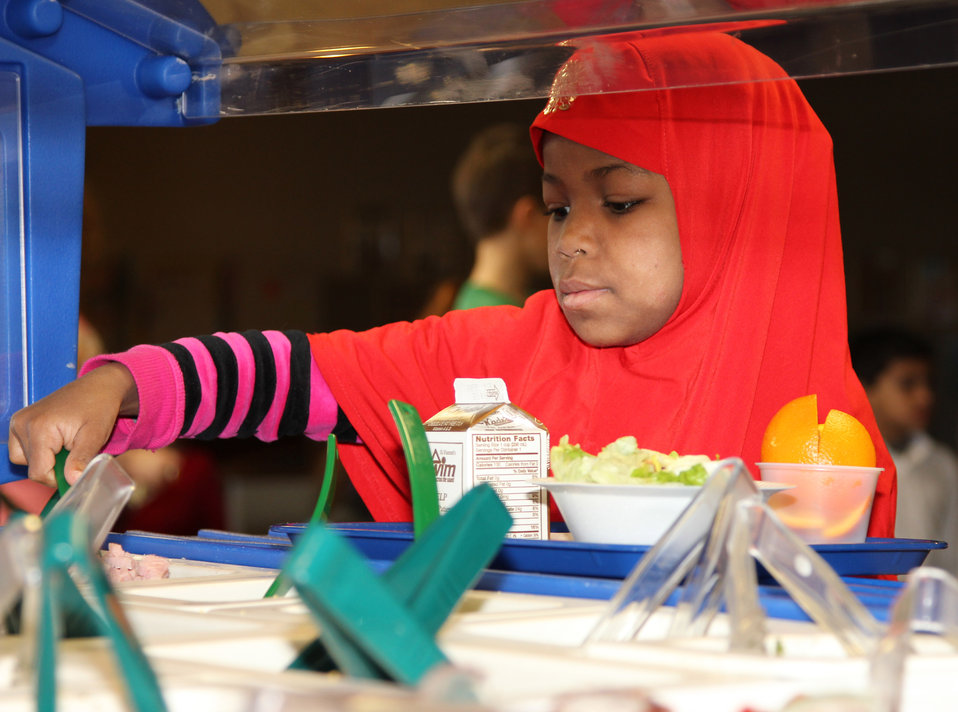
Students at the Wolcott Elementary School in West Hartford, Connecticut enjoying lunchtime during Agriculture Secretary Tom Vilsack’s visit to outline the U.S. Department of Agriculture (USDA) efforts to raise a healthier generation of Americans - April 5, 2013.